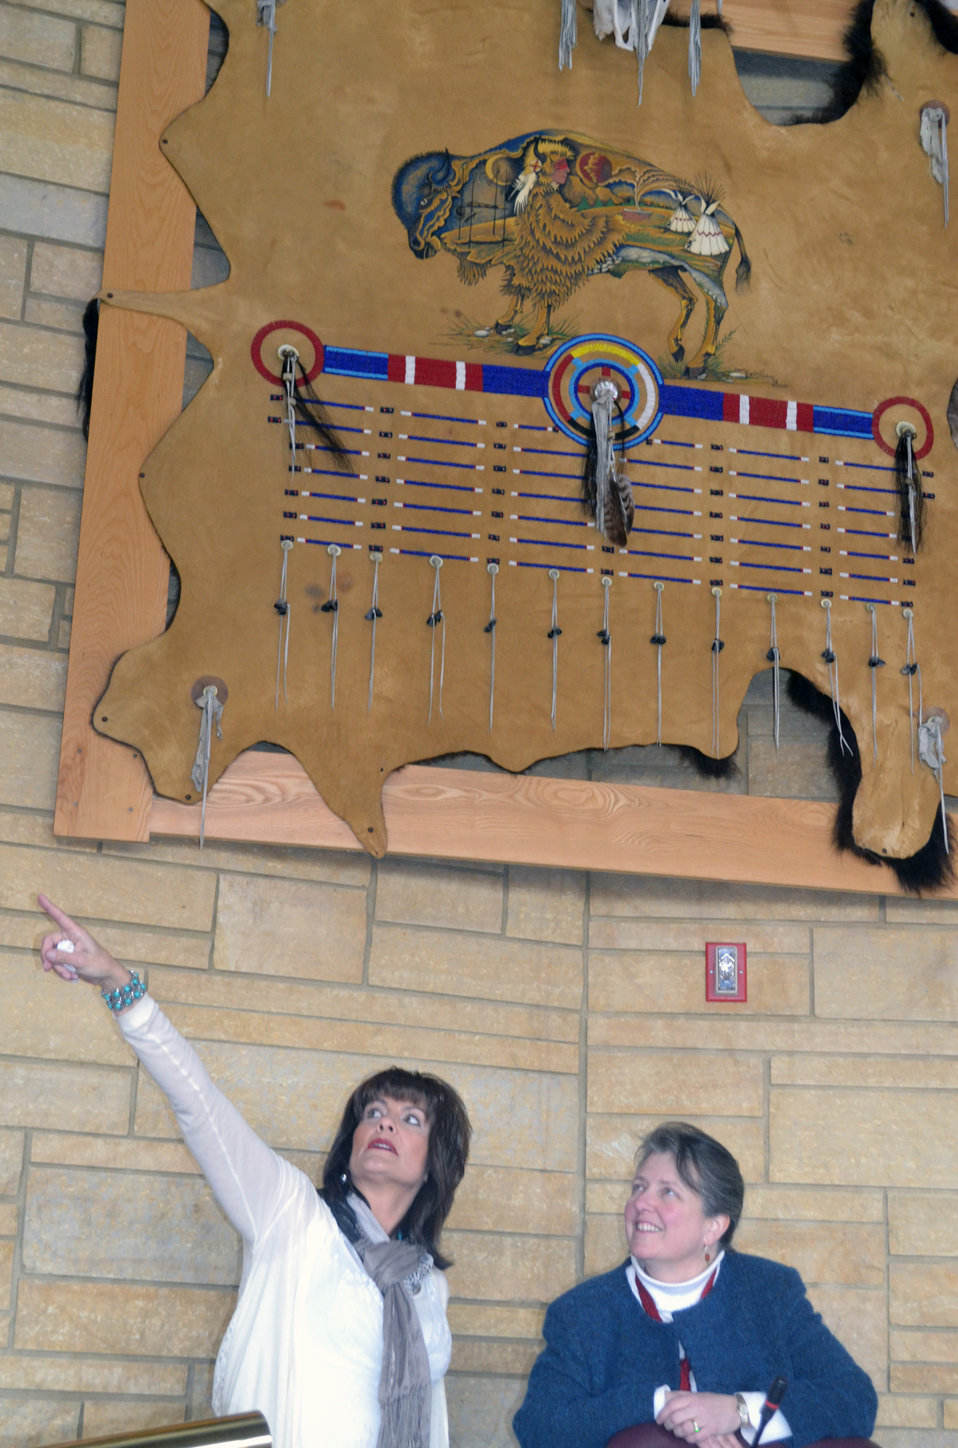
Agriculture Deputy Secretary Kathleen Merrigan hosted two roundtable meetings in Lower Brule, SD on Feb. 28, 2013. Deputy Secretary Merrigan held a press availability with tribal leaders to reaffirm the Obama Administration’s commitment to Indian Country and highlight the U.S. Department of Agriculture’s (USDA) efforts to promote business development and job creation in rural South Dakota.